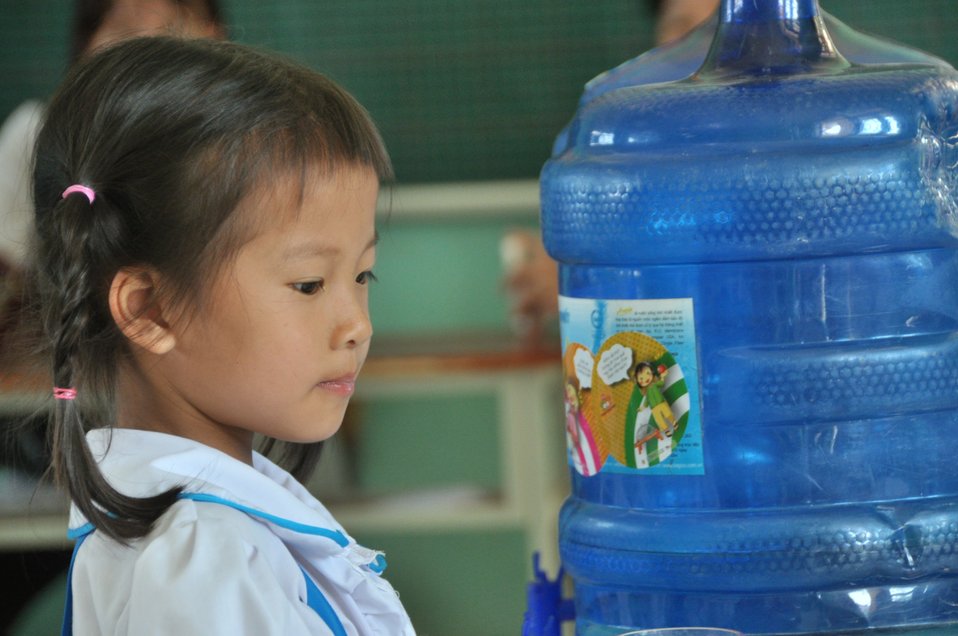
USAID supports deworming education and medication distribution in Bac Giang Province

May 20, 2013